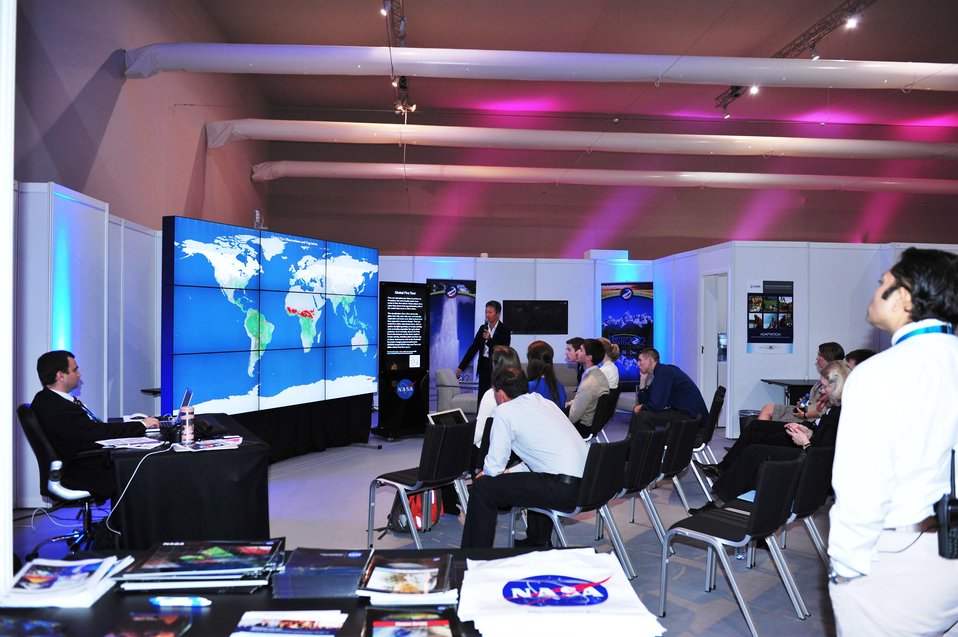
Visitors view data visualizations at the U.S. Center at the 18th Session of the Conference of the Parties to the UN Framework Convention on Climate Change (COP-18) in Doha, Qatar, November 26, 2012.